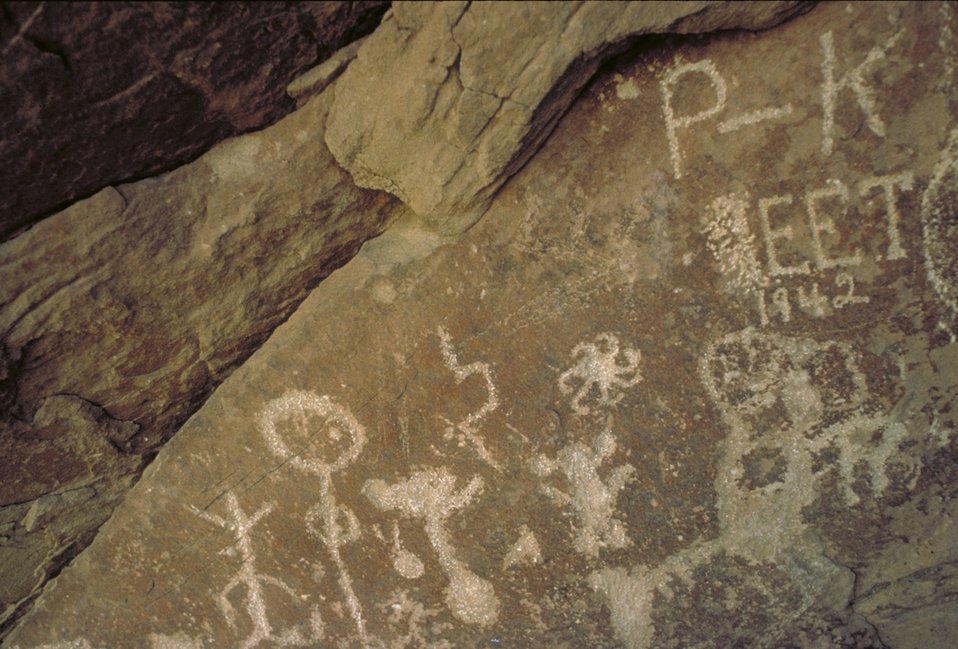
Petroglyphs